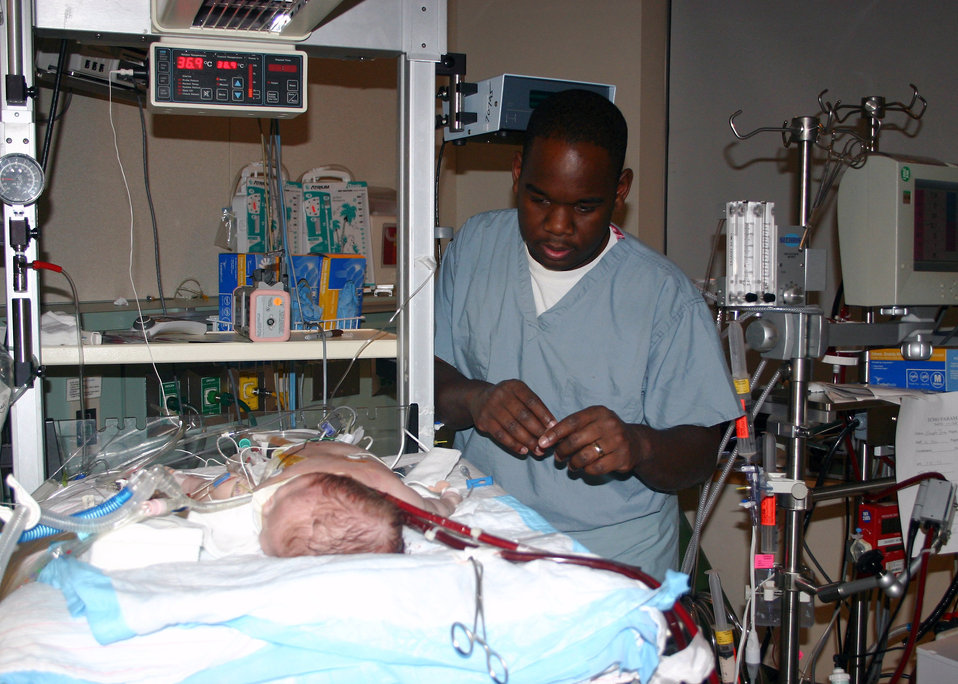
ECMO mission

Capt. Moayad Fowler, a registered nurse in the 59th Medical Wing, checks Jacob Rambish's vitals Feb. 22 in the neonatal intensive care unit in Wilford Hall Medical Center at Lackland Air Force Base, Texas. The 6-week-old infant was placed on heart/lung bypass equipment and transported to Wilford Hall Feb. 22 for advanced medical care.